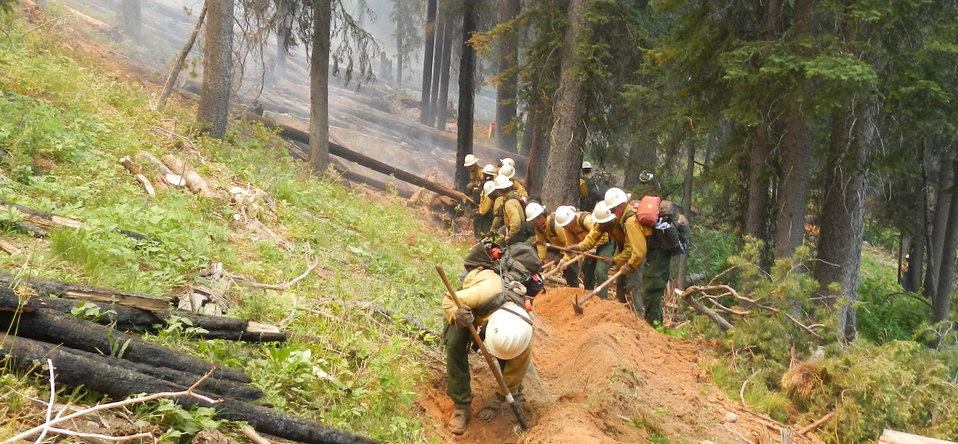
Fire crews building fire line on The Ridge Fire. The Ridge Fire in the Boise National Forest, ID near Lowman, ID began on Jul. 16, 2013 by lightning and has consumed approximately 5,143 acres. The Ridge Fire is approximately 20% contained.